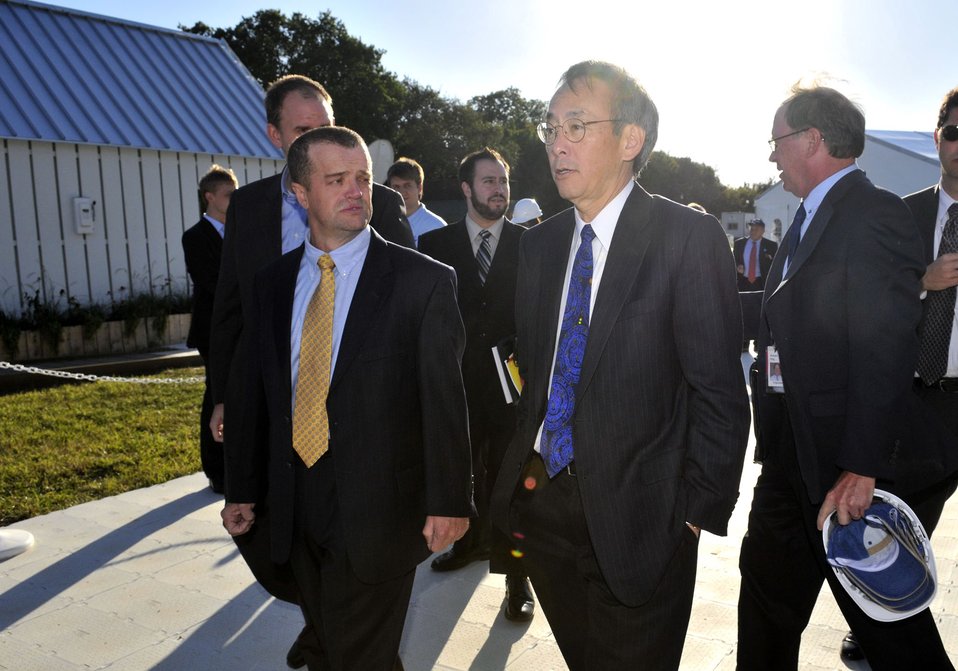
Solar Decathlon 2009 on the National Mall, with Sec. Chu

Solar Decathlon 09